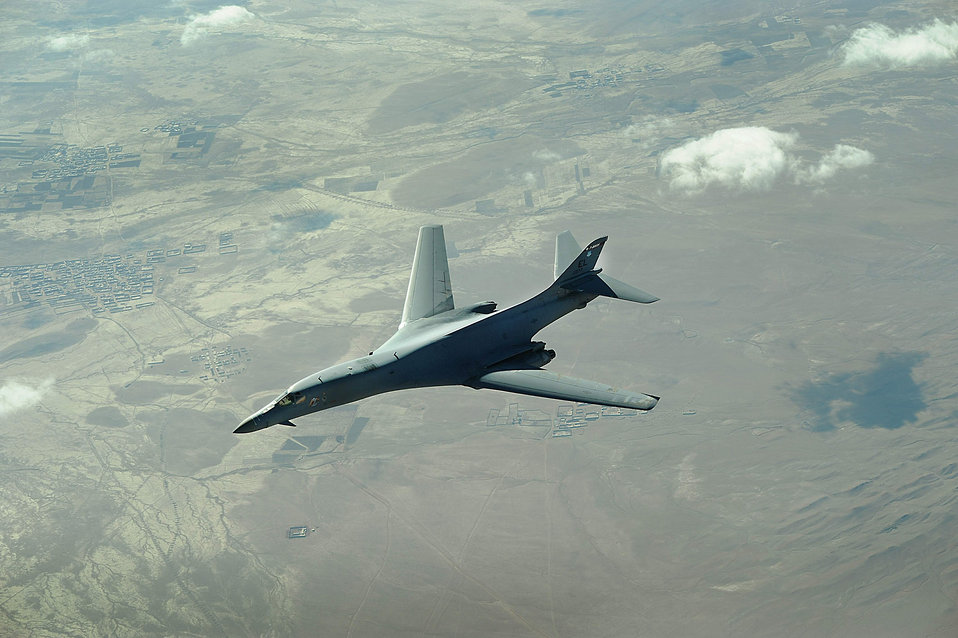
Airpower summary: B-1B pounds enemy compound

An Air Force B-1B Lancer flies a mission over Afghanistan. The B-1B can rapidly deliver massive quantities of precision and non-precision weapons against any adversary, anywhere in the world, at any time.